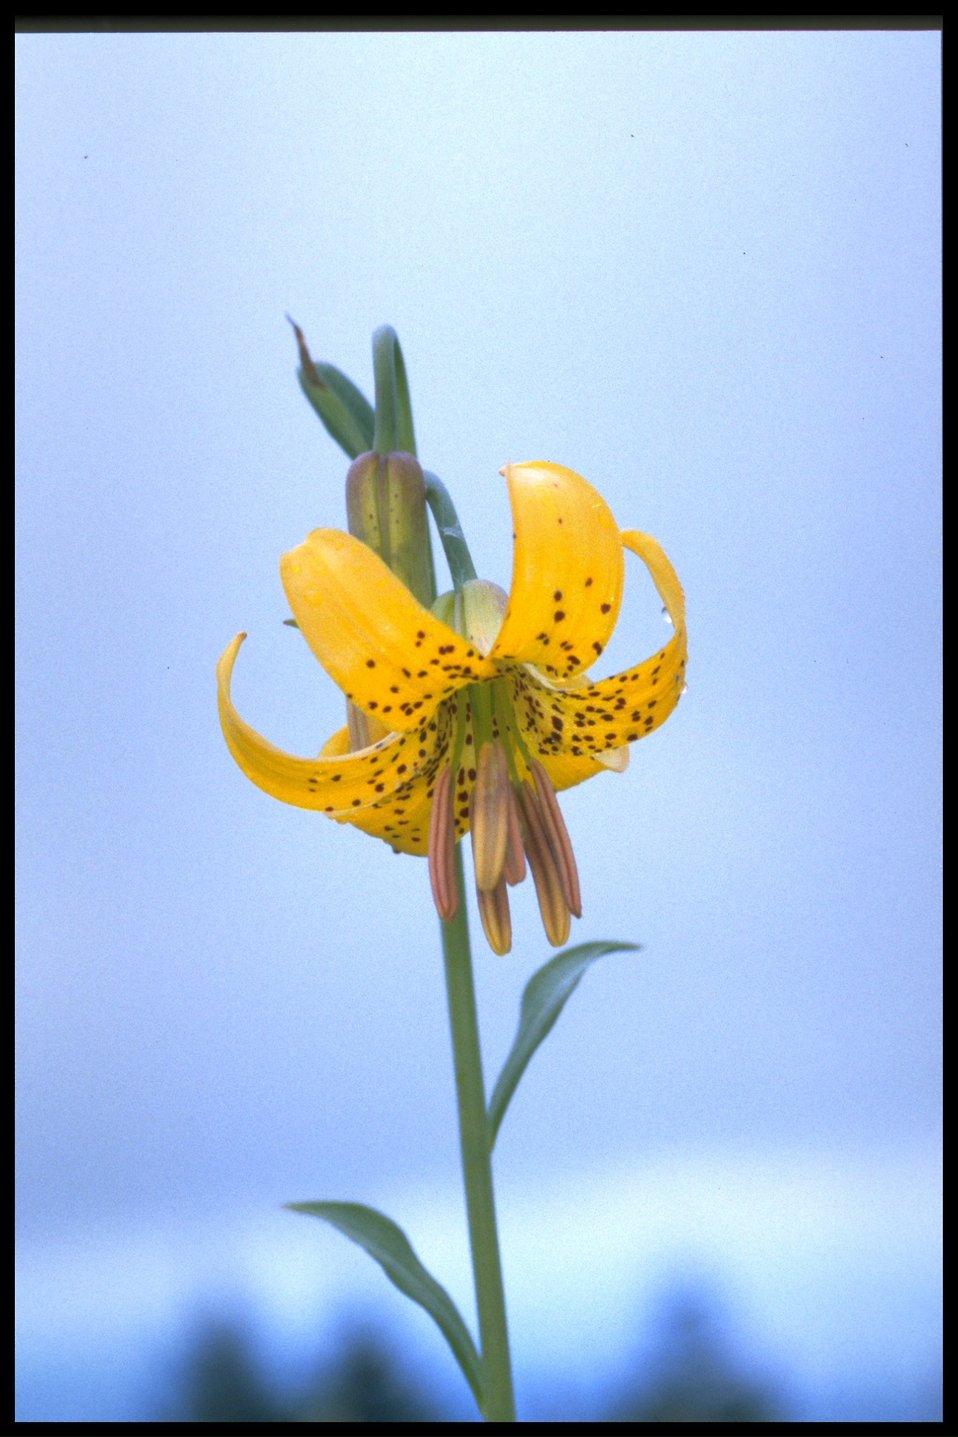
Medium shot of tiger lily, Lilium columbianum.